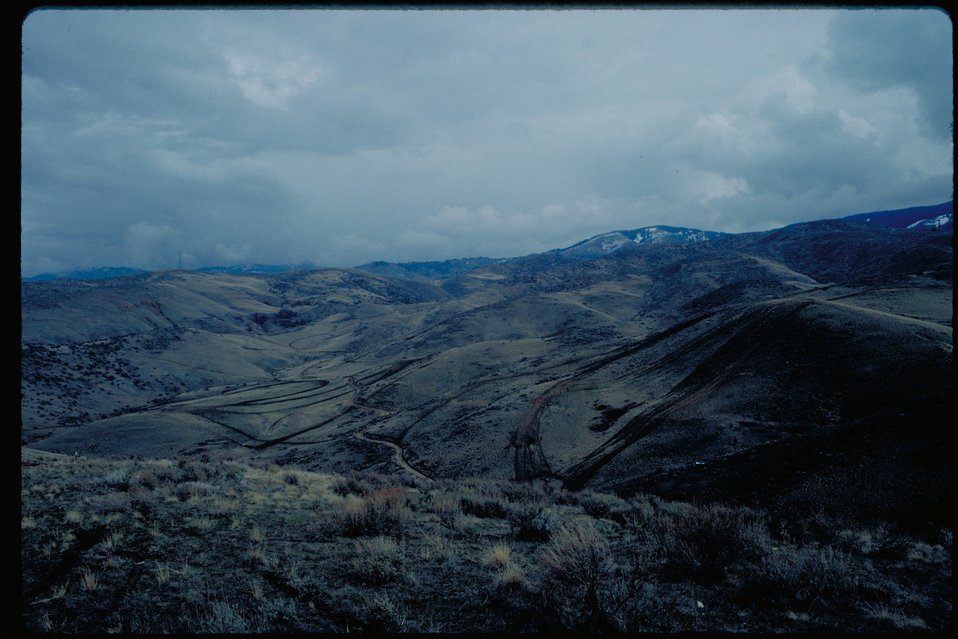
OHV Trails Boise Front over view Four Rivers Field Office LSRD Lower Snake River District